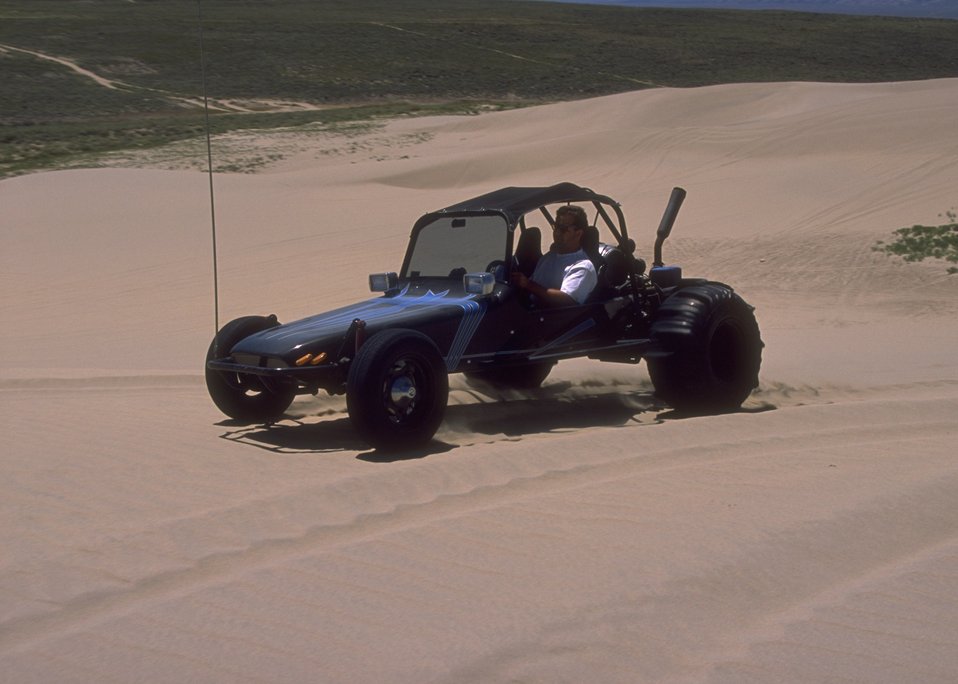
Sand Dunes OHV Area, Rock Springs Field Office.